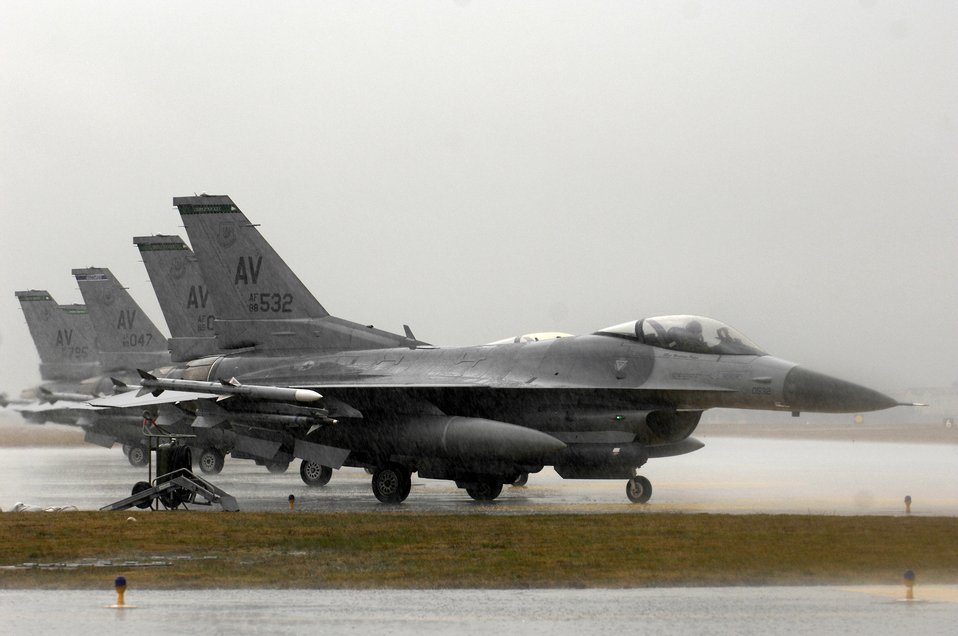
CENTAF airpower summary for March 8, 2007

F-16 Fighting Falcons, like the ones shown, fly combat missions daily in support of Operation Iraqi Freedom. The F-16, a compact, multi-role fighter, is highly maneuverable and has proven itself in air-to-air combat and air-to-ground surface attack.